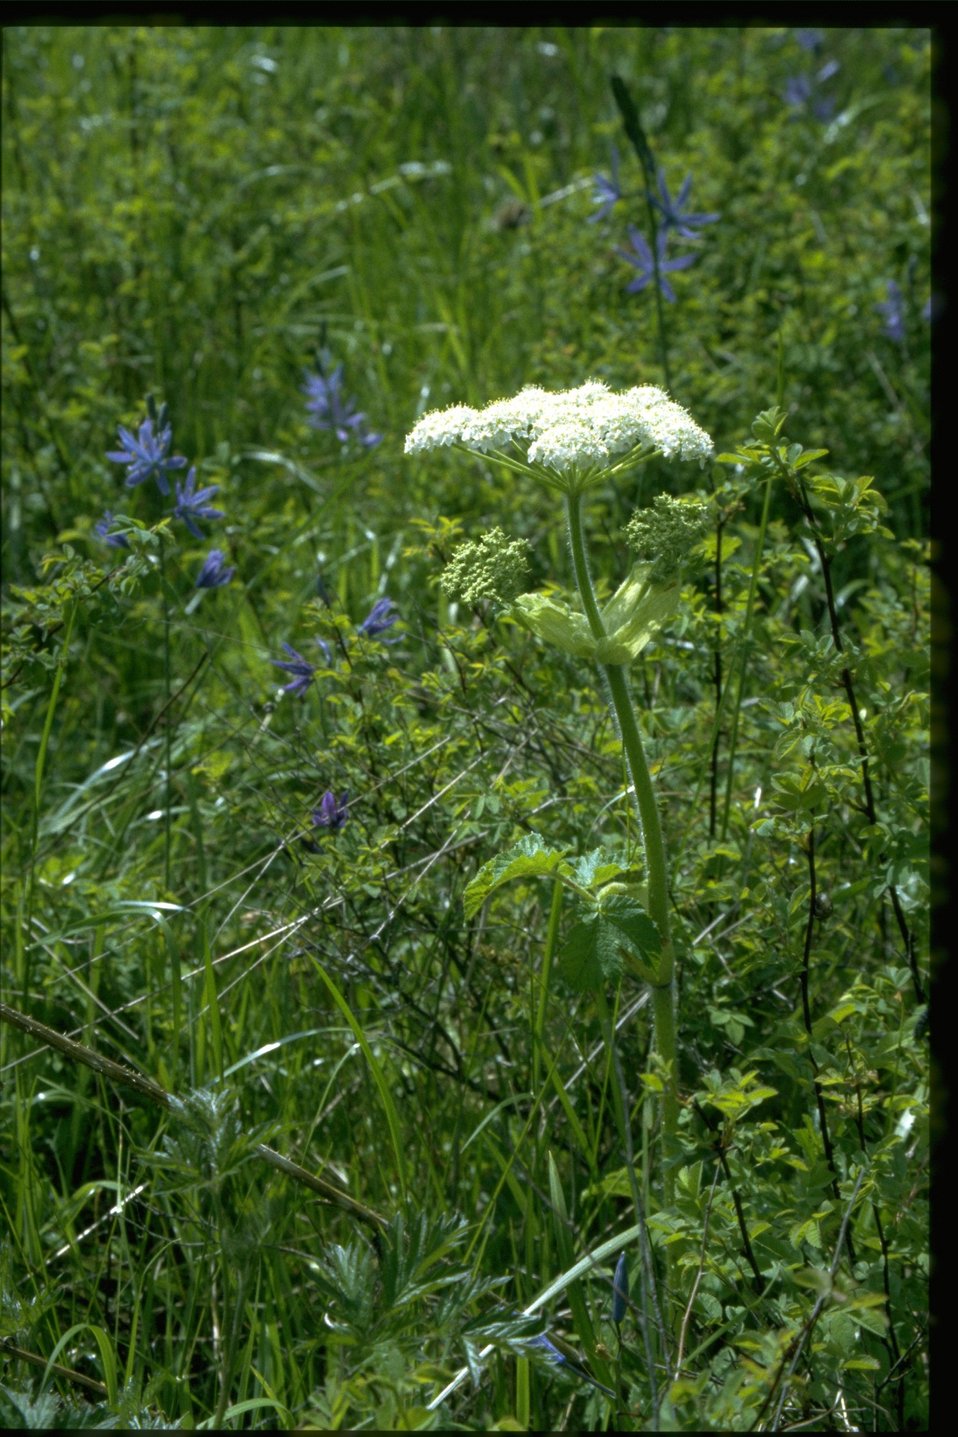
Farshot of Angelica genuflexa or arguta.